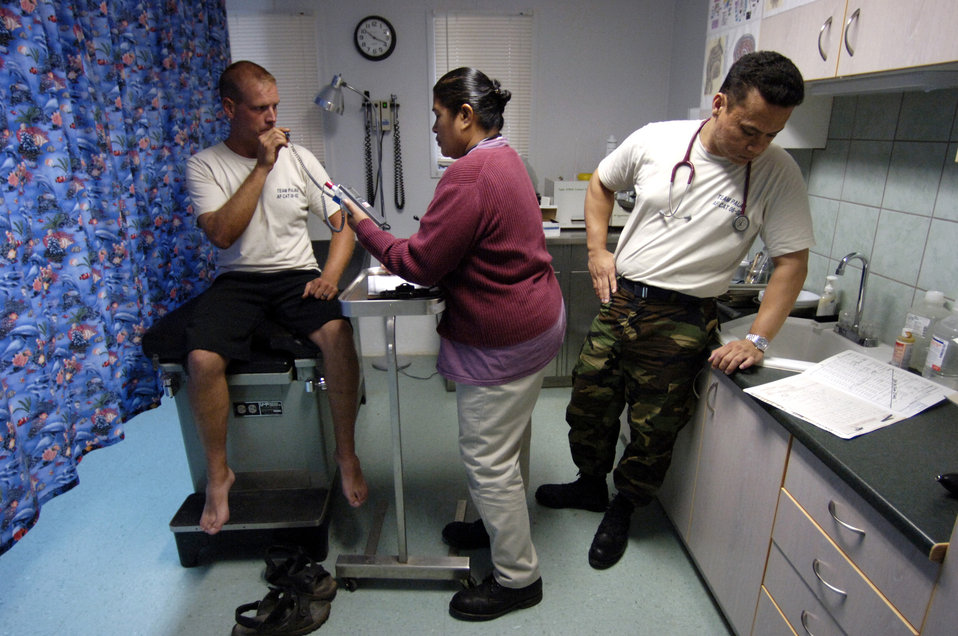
Palau civic action team

BABLEDAOB, Palau (AFPN) -- Capt. Dan Calderon, looks over a chart while his Palauan apprentice, Georgia Renguul, takes Tech. Sgt. Matt Schott's temperature. Captain Calderon and Sergeant Schott are from the Palau civic action team. The mission of the program is twofold. It aids host nations in their basic infrastructure development and it provides a favorable U.S. military presence through community construction, apprentice training, a medical civic action program and community relations.